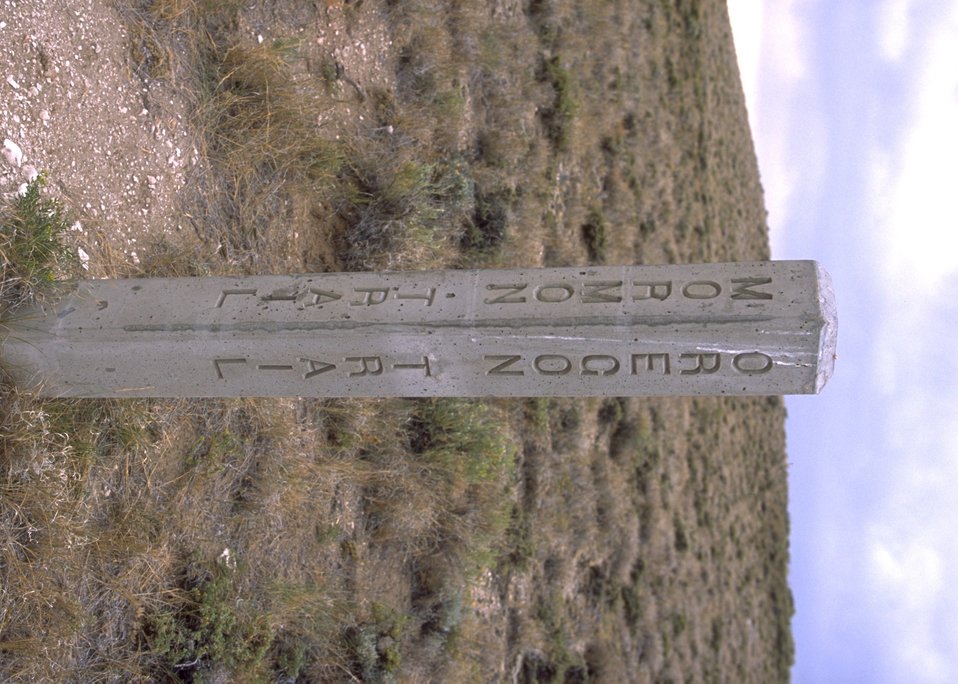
Oregon and Mormon Trail marker near South Pass, Rock Springs Field Office.